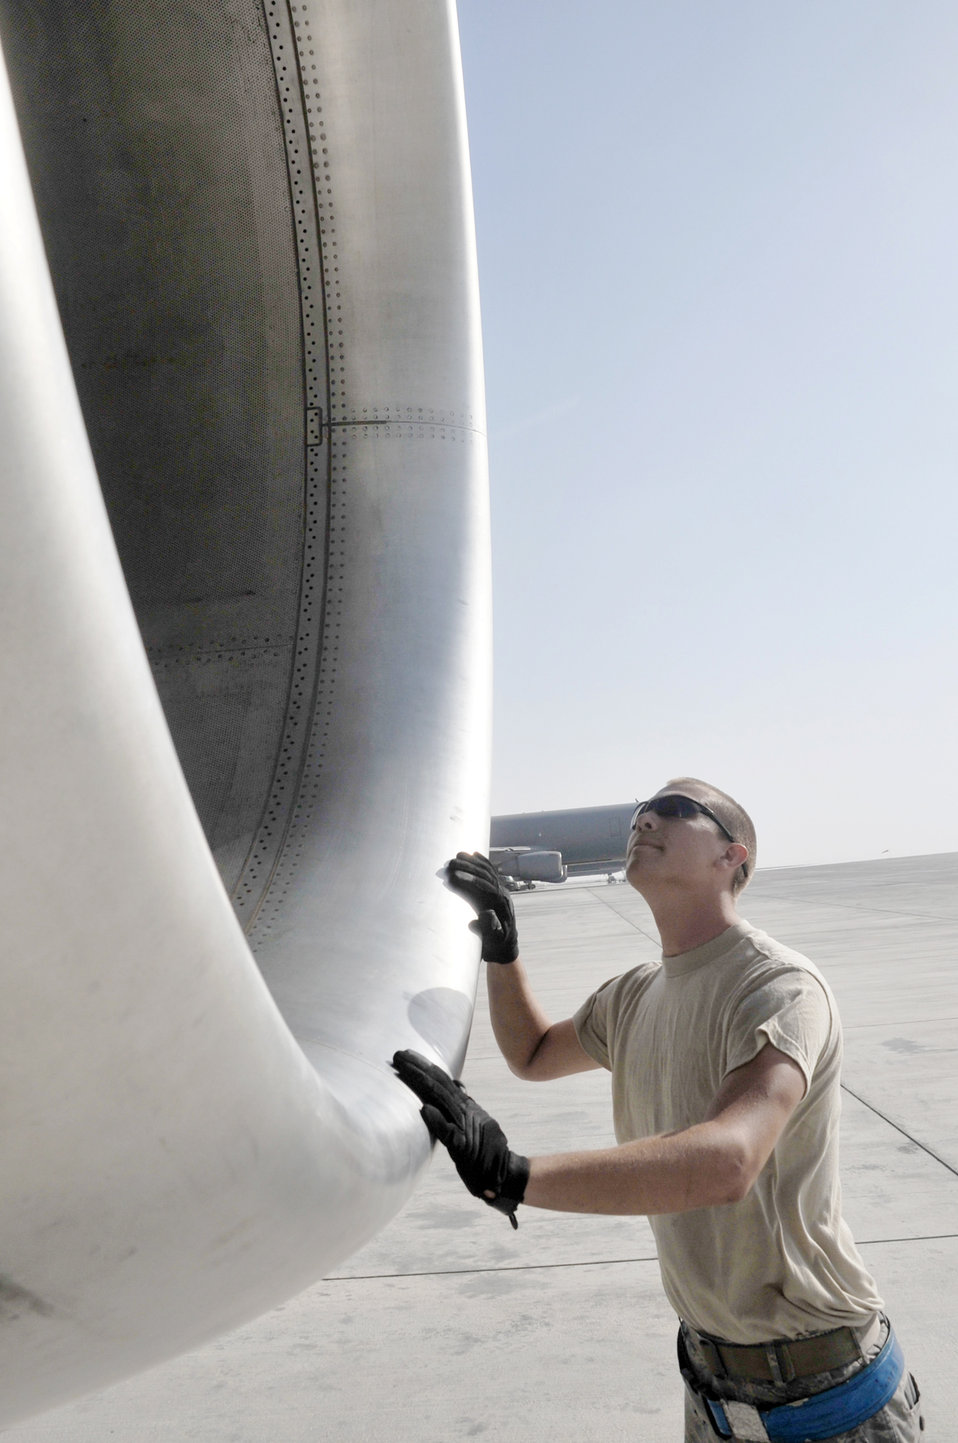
Looks good to me

Airman 1st Class Michael Warren works on a KC-10 Extender during operations on the flightline April 20, 2010, for the 380th Air Expeditionary Wing at an air base in Southwest Asia. Airman Warren is a crew chief with the 380th Expeditionary Aircraft Maintenance Squadron, and deployed from Joint Base McGuire-Dix-Lakehurst, N.J.